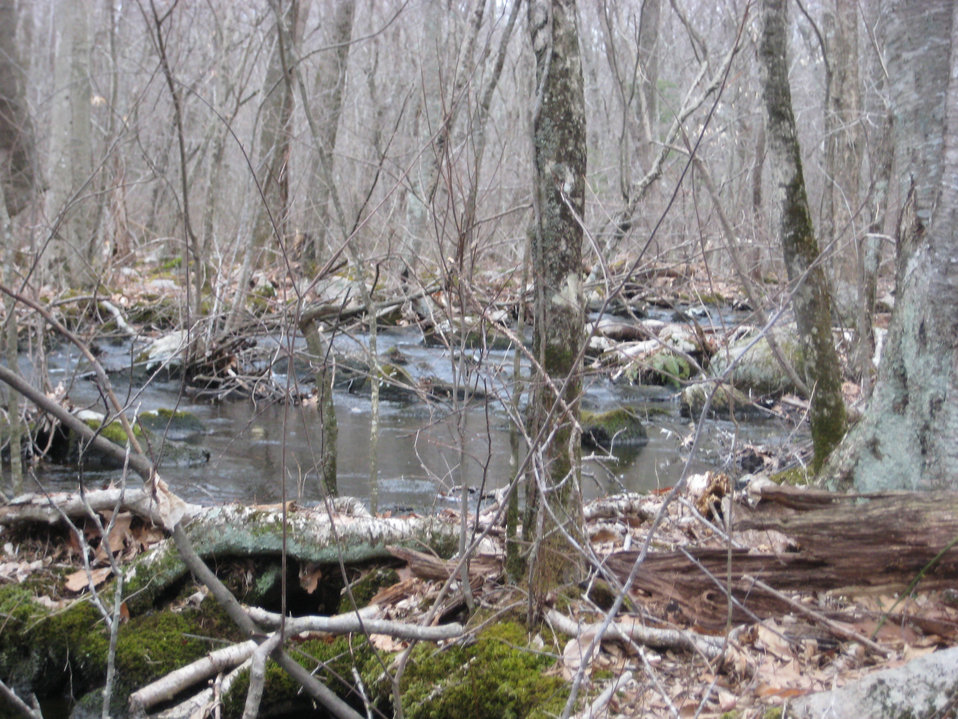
Red maple swamp

A red maple swamp in Rhode Island. Part of the Buzzards Bay Watershed project supported by the North American Wetlands Conservation Act.